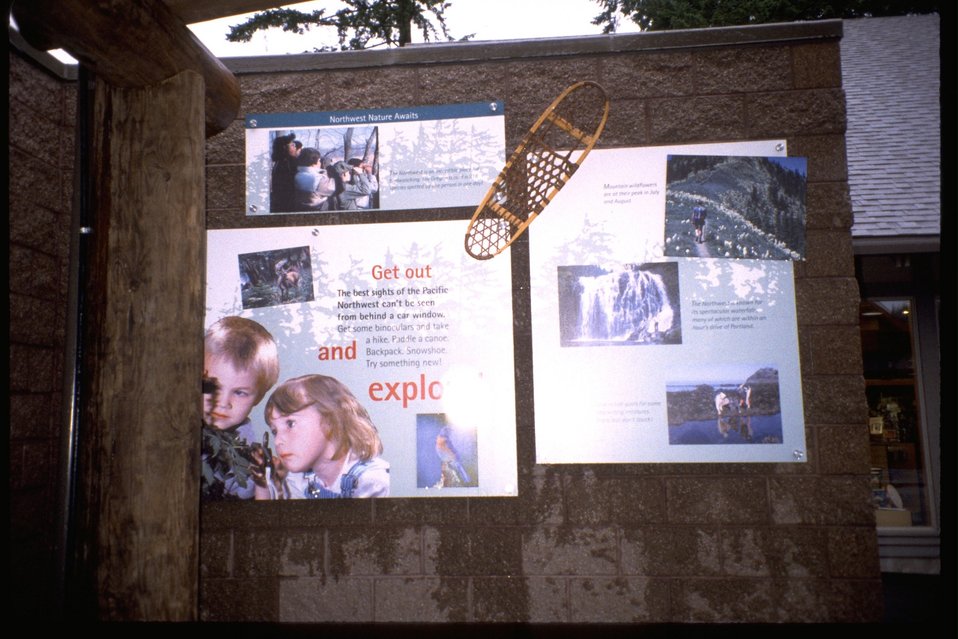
Displays at the interagency public lands kiosk at Oregon Zoo.